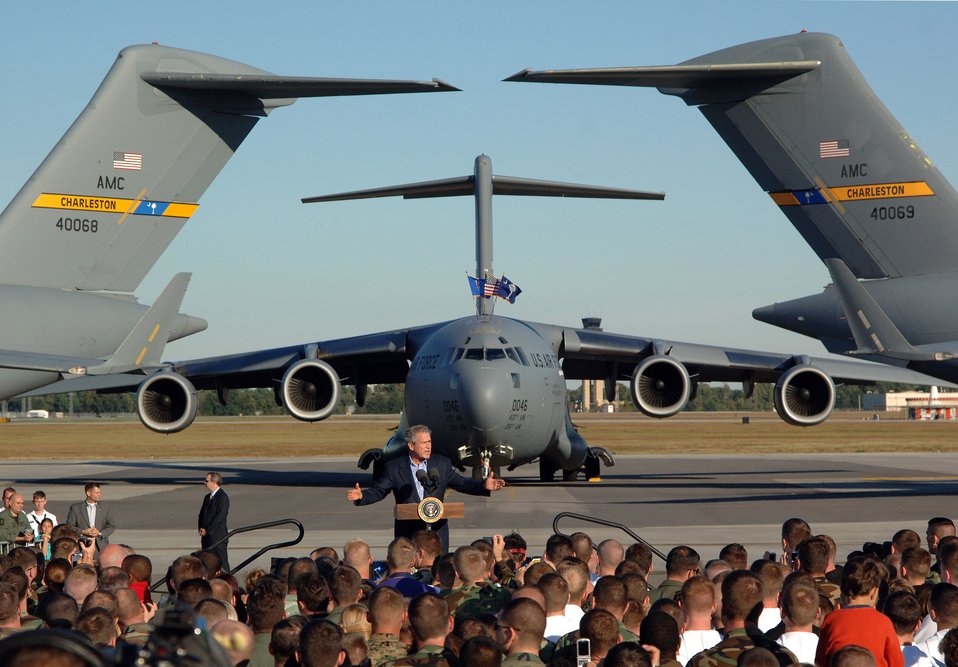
President speaks at Charleston AFB

President George W. Bush delivers a speech in front of several C-17 Globemaster IIIs at Charleston Air Force Base, S.C., Oct. 28. More than four thousand servicemembers and families attended the presidential rally where he spoke on the war on terrorism.